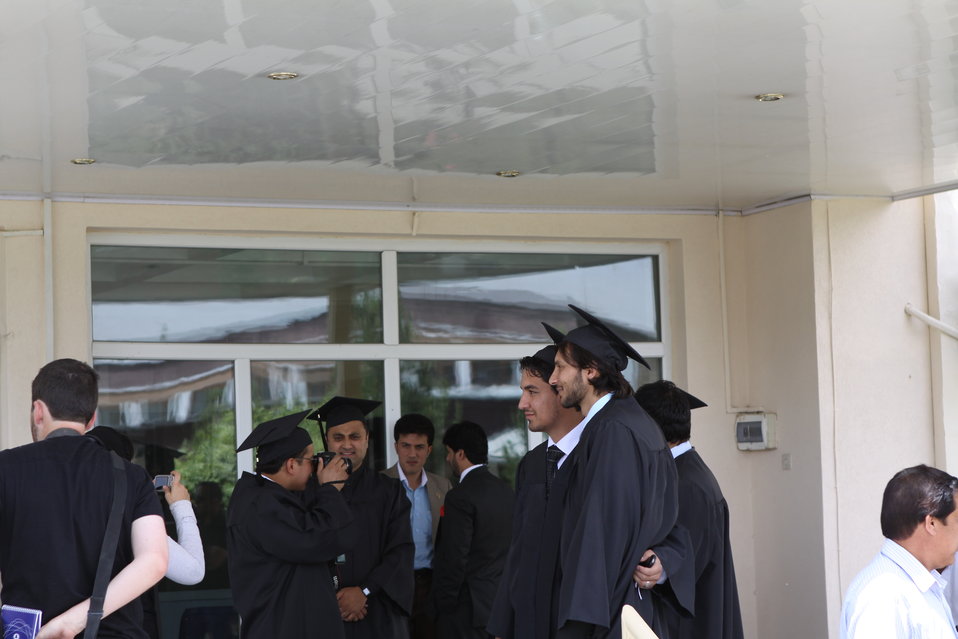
100526 AUAF Graduation 005